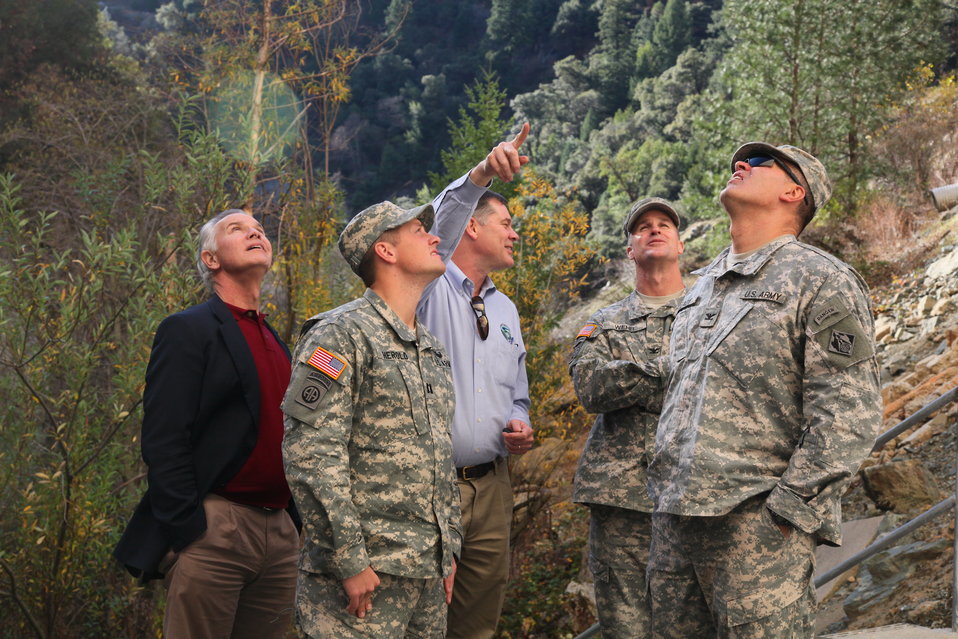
Touring New Bullards Bar Dam

At the base of New Bullards Bar Dam on the north fork of the Yuba River, general manager Curt Aikens (center) of the Yuba County Water Agency, led a tour of the New Bullards Bar Reservoir’s facilities Dec. 9, 2011, outside Marysville, Calif. Aikens and his agency hosted the tour for U.S. Army Corps of Engineers South Pacific Division commander Col. Mike Wehr (second from right), Sacramento District commander Col. Bill Leady (right), Paul Robershotte (far left), special adviser for the South Pacific Division, and Capt. Chris Herold, Aide de Camp for Col. Wehr. The tour gave the Corps officials an opportunity to see and hear first-hand the water agency’s existing and planned flood-risk reduction projects. The tour also included a visit to the agency’s water supply facilities, fishery enhancements, recreation and hydro-electric generation at Daguerre Point, Englebright and Bullards Bar Dams.